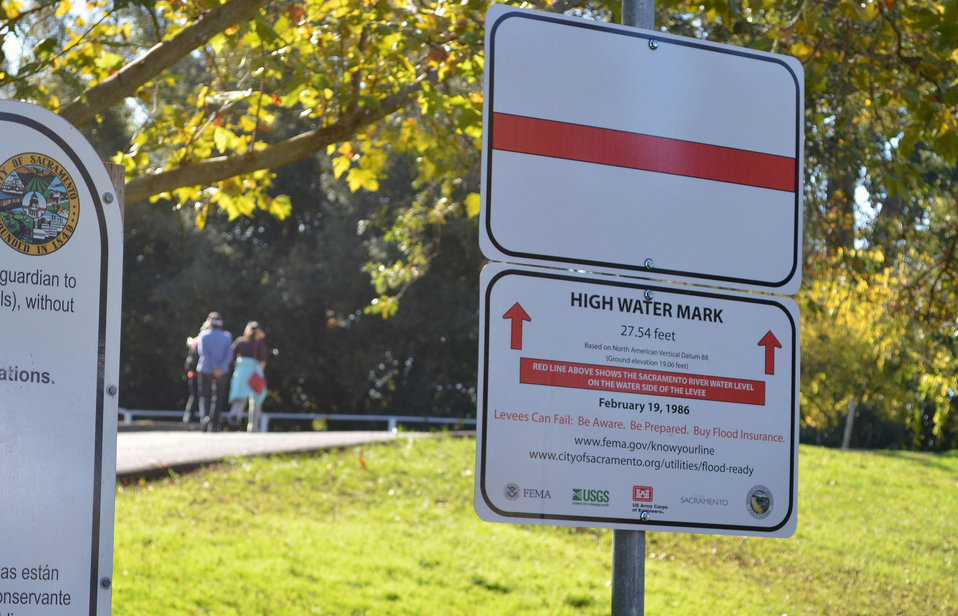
Corps supports Sacramento high water mark event

A new high water mark sign was unveiled at Garcia Bend Park in Sacramento, Calif., Nov. 8, 2013. The sign marks the highest known elevation of the Sacramento River, and how high floodwater would’ve been in the park if the levee had failed. The U.S. Army Corps of Engineers deputy district engineer spoke at the event which was hosted by the cities of Sacramento and Roseville to increase flood awareness and preparedness in the region.